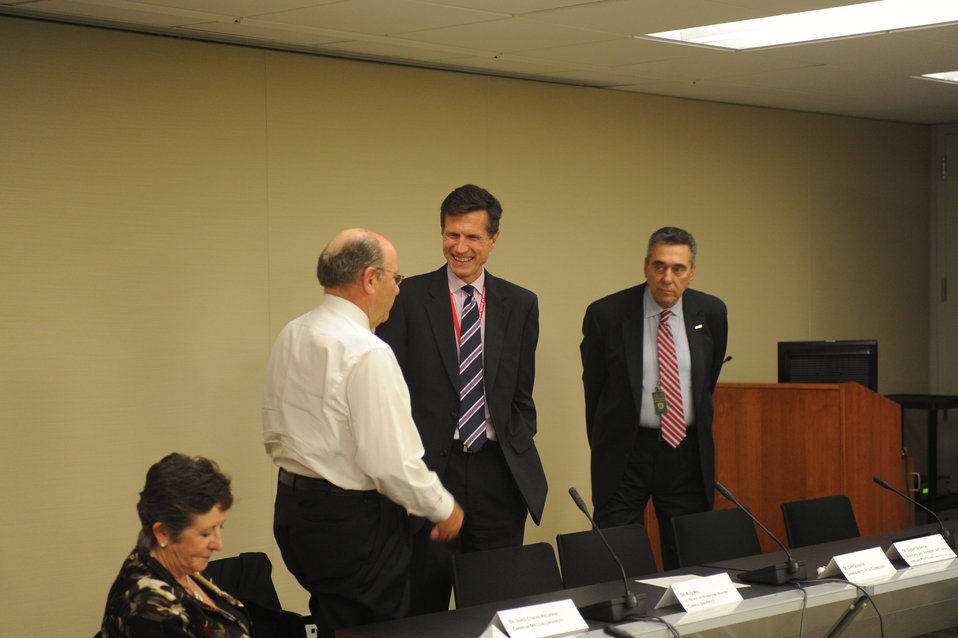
Assistant Secretary Blake Speaks With Participants

Assistant Secretary of State for South and Central Asian Affairs Robert O. Blake speaks with participants at the Higher Education Roundtable in Washington, D.C., on September 16, 2010.